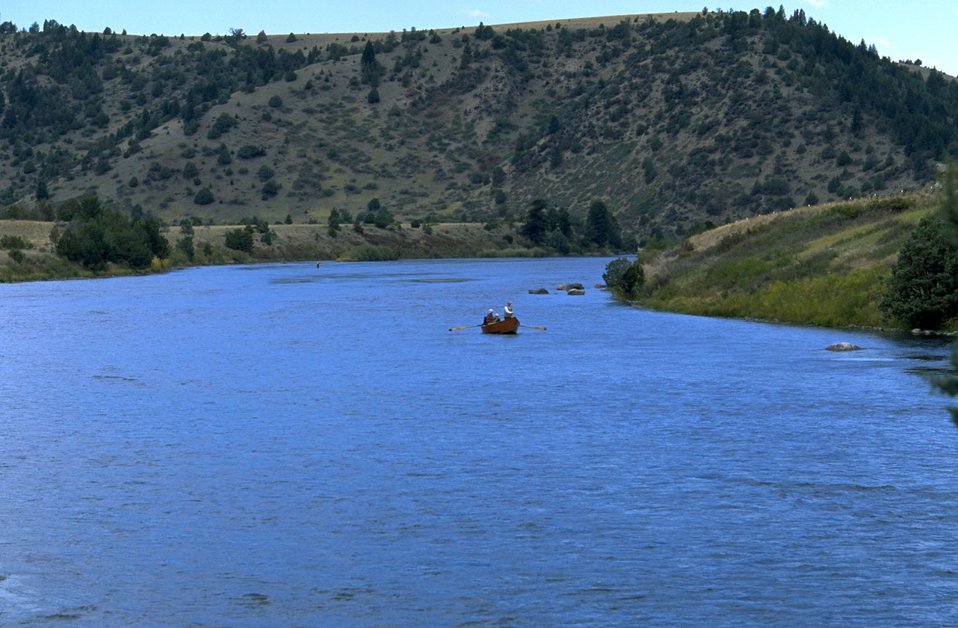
Floating and Fishing on the Madison River